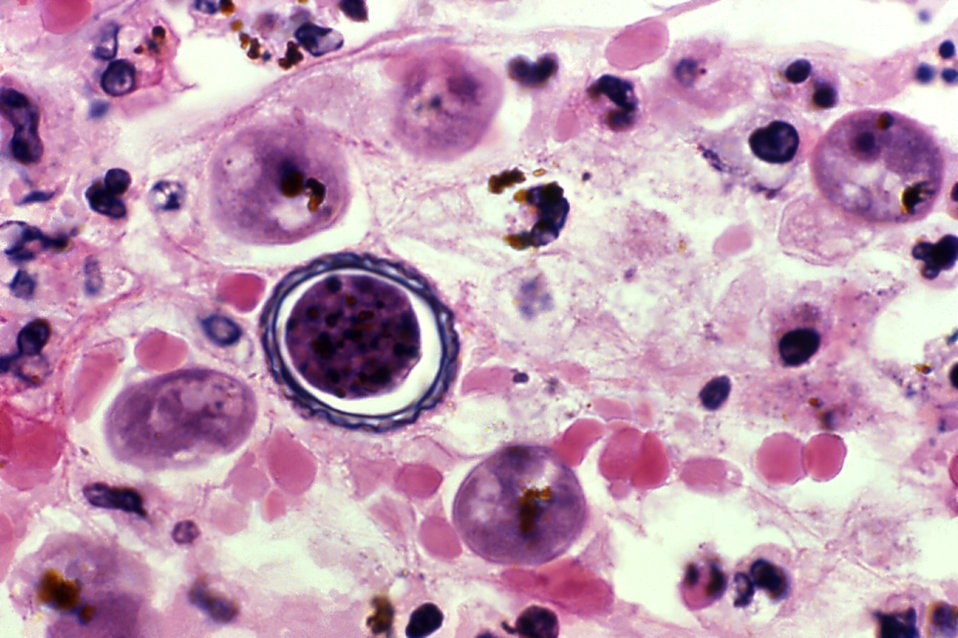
This photomicrograph depicted a magnified view of brain tissue within which was a centrally located Acanthamoeba sp. cyst. Acanthamoeba spp. are opportunistic free-living amebae, capable of causing granulomatous amebic encephalitis (GAE) in individuals with compromised immune systems.